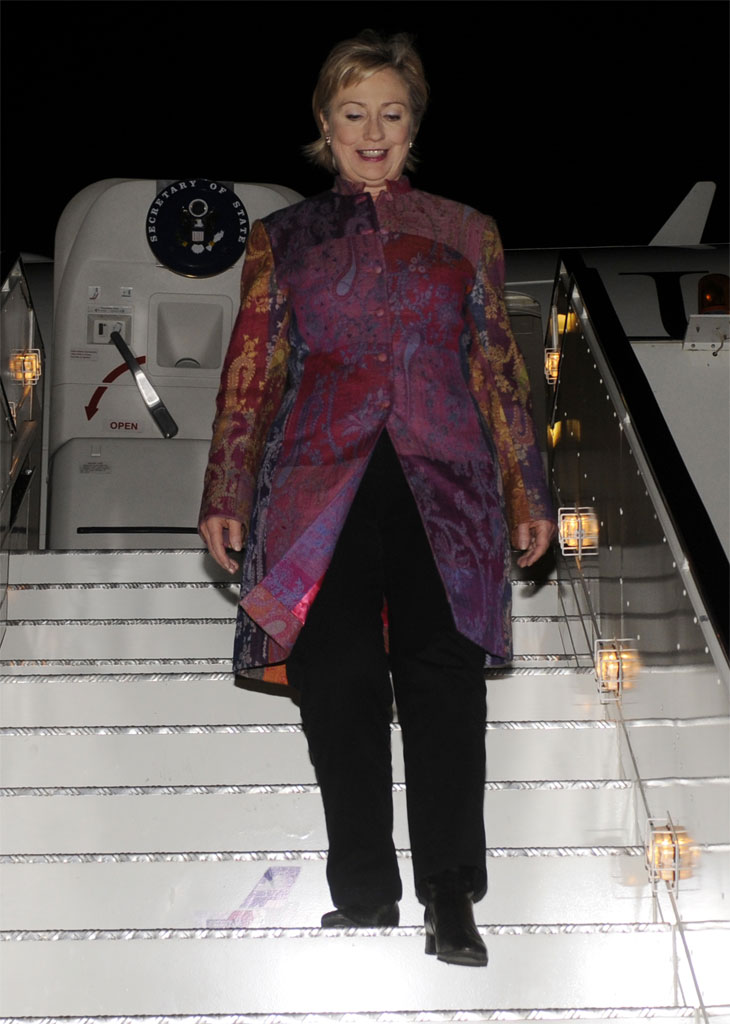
Secretary Clinton Arrives in Egypt

Secretary Clinton arrives in Sharm el-Sheikh, Egypt March 1, 2009.